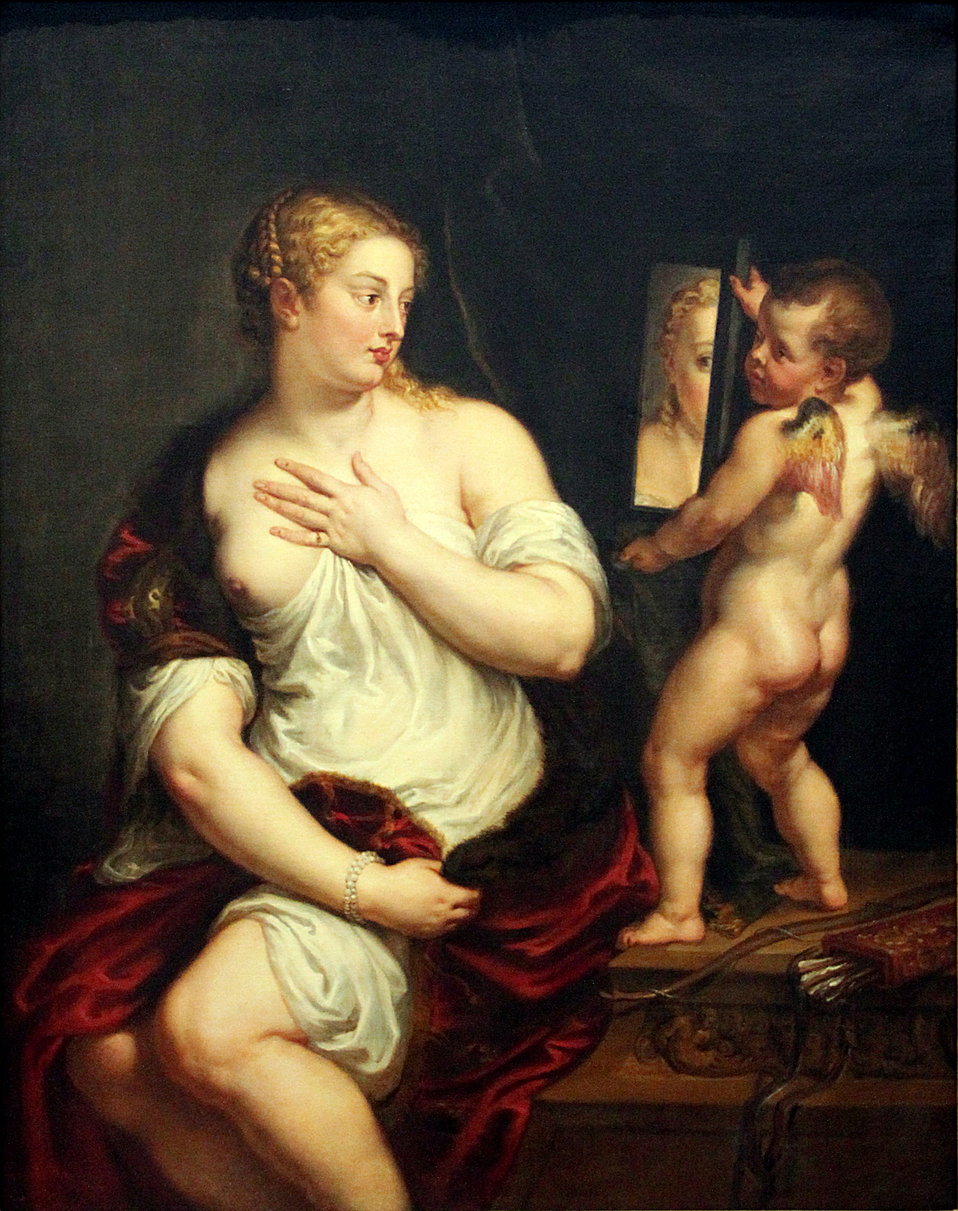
0 Vénus et Cupidon - P.P. Rubens - Musée Thyssen-Bornemisza (2)